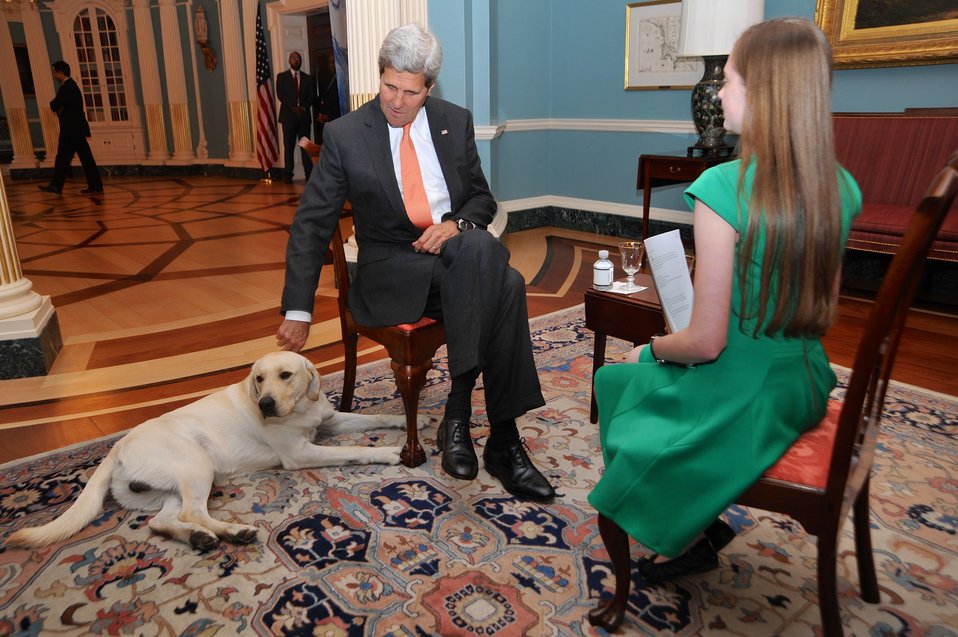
Secretary Kerry and His Dog Ben Sit Down for an Interview With National Geographic Kids Reporter Moore

U.S. Secretary of State John Kerry and the 'Diplomutt,' his Labrador Retriever Ben, sit with National Geographic Kids reporter Mallory Moore for an interview at the U.S. Department of State in Washington, D.C. on June 17, 2014.